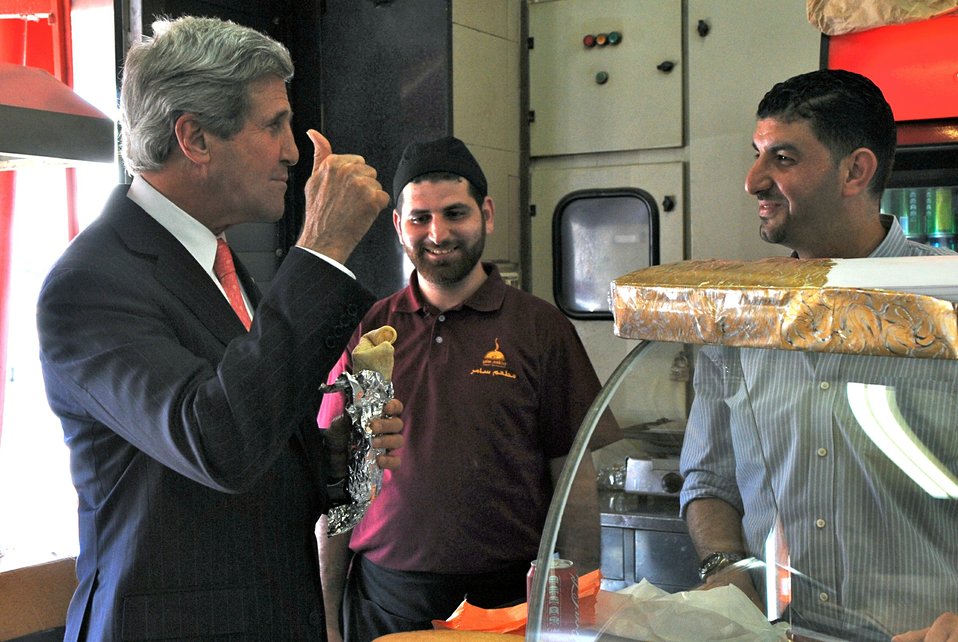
Secretary Kerry Enjoys a Shawarma Sandwich in Ramallah

U.S. Secretary of State John Kerry shows his appreciation to the employees that prepared his delicious shawarma sandwich at a shop in Ramallah on May 23, 2013.